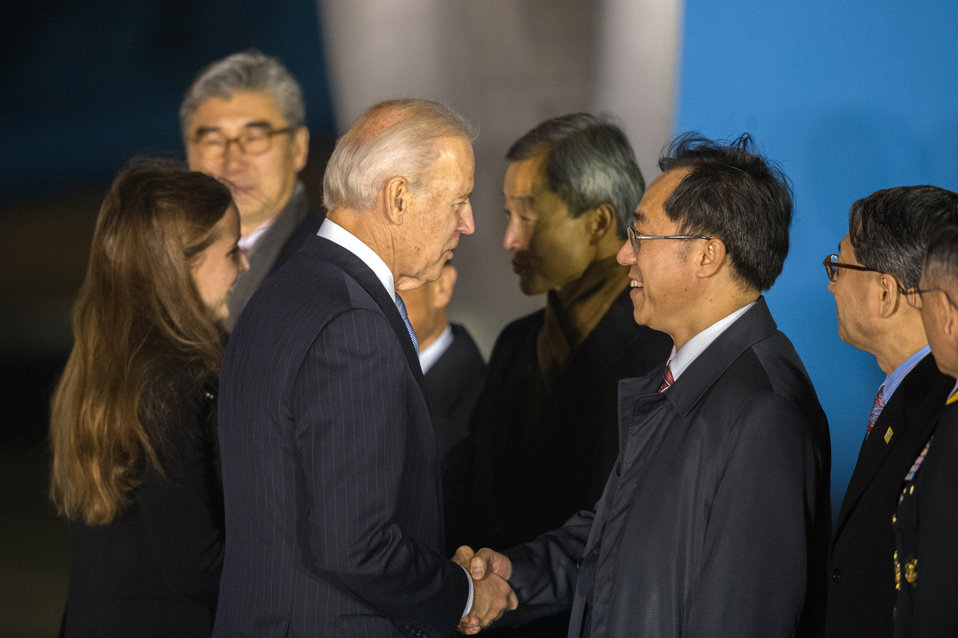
Vice President Biden Arrives in the Republic of Korea

Vice President Joseph Biden is welcomed by greeters upon arrival at Osan Air Base outside of Seoul, South Korea, on December 5, 2013.